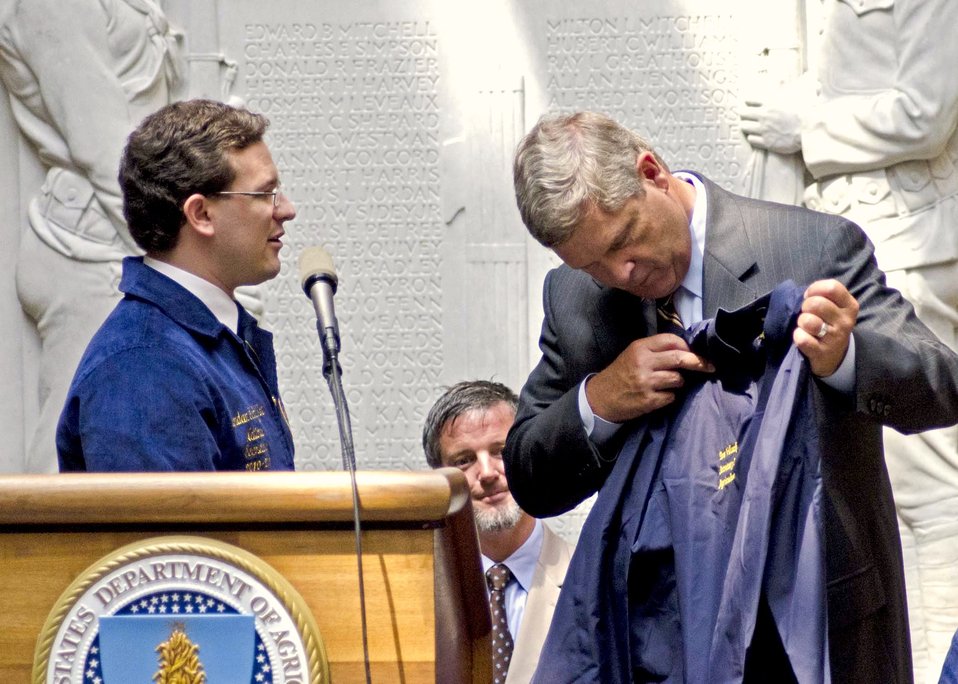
Agriculture Secretary Tom Vilsack receives an Future Farmers of America (FFA) jacket from National FFA Secretary Landan Schaffert at the National FFA leadership conference held at the U.S. Department of Agriculture in Washington, DC, on Thursday, July 28, 2011.